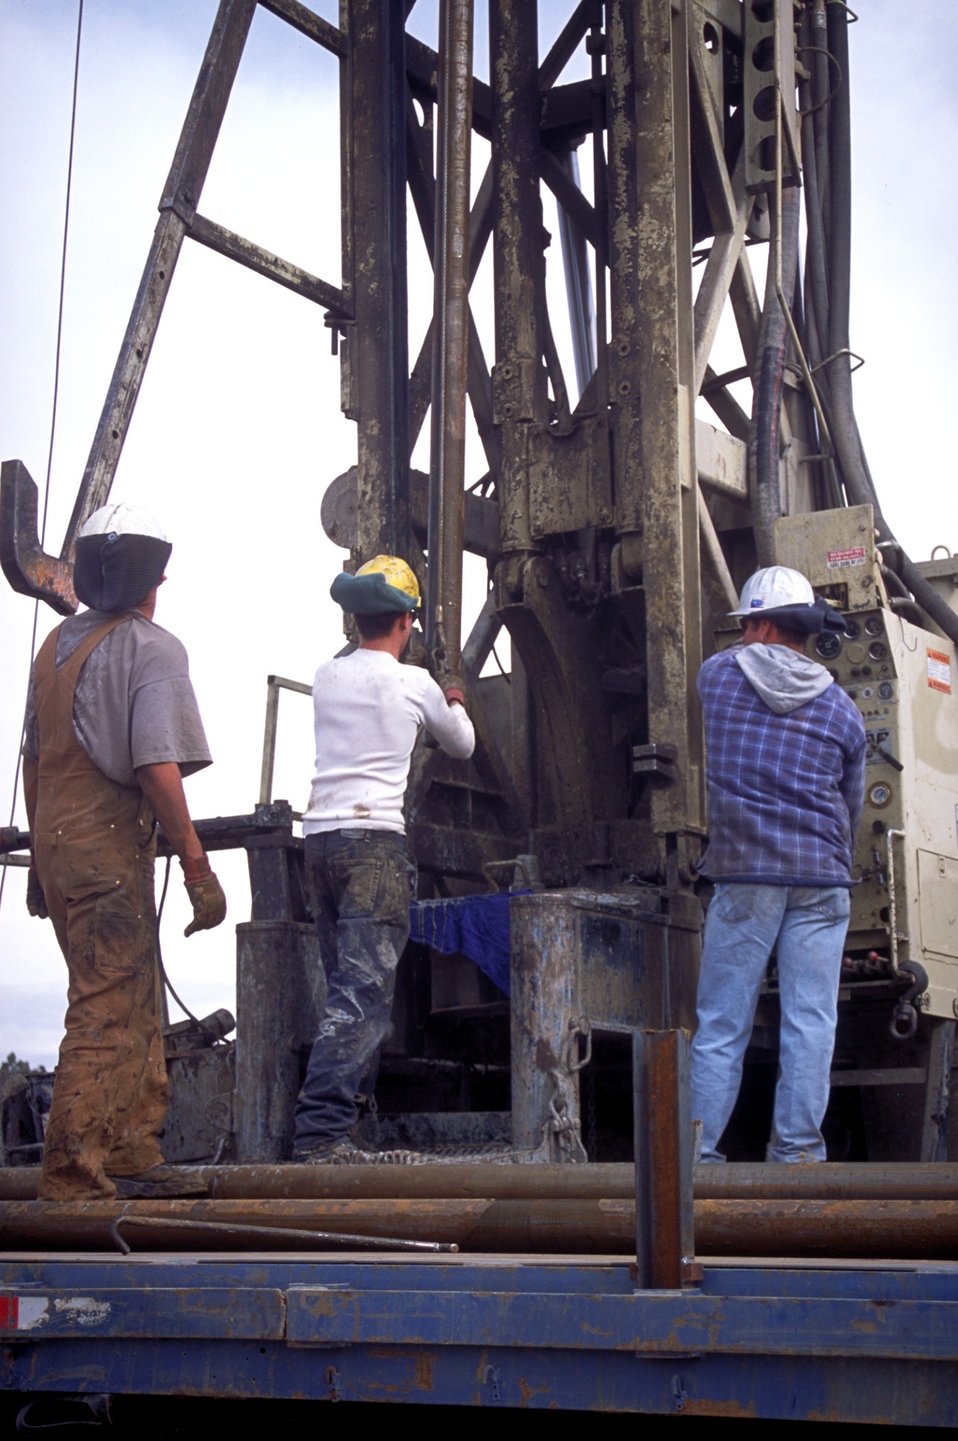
Drilling for coal bed methane near Price, Utah.